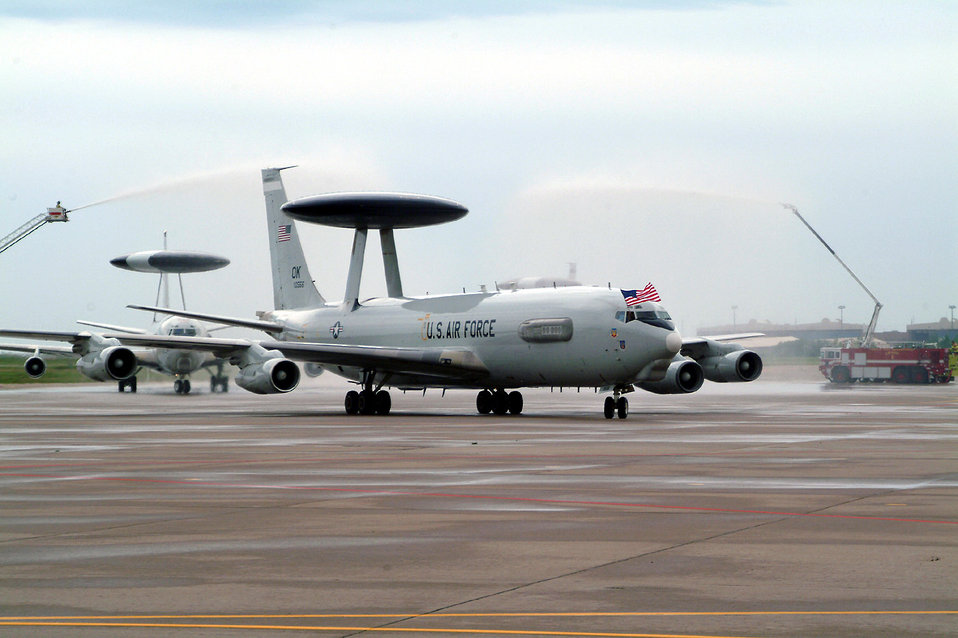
AWACS return

TINKER AIR FORCE BASE, Okla. (AFPN) -- Five E-3 Sentry airborne warning and control system aircraft receive a traditional hosing-down upon returning here April 28.